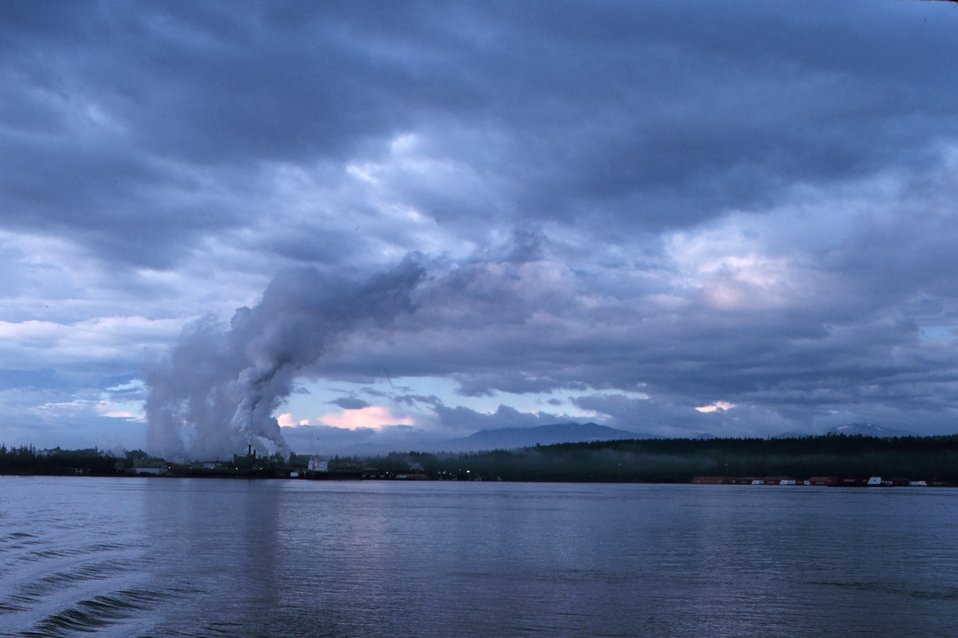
A lumber mill makes its own weather along the Inside Passage.